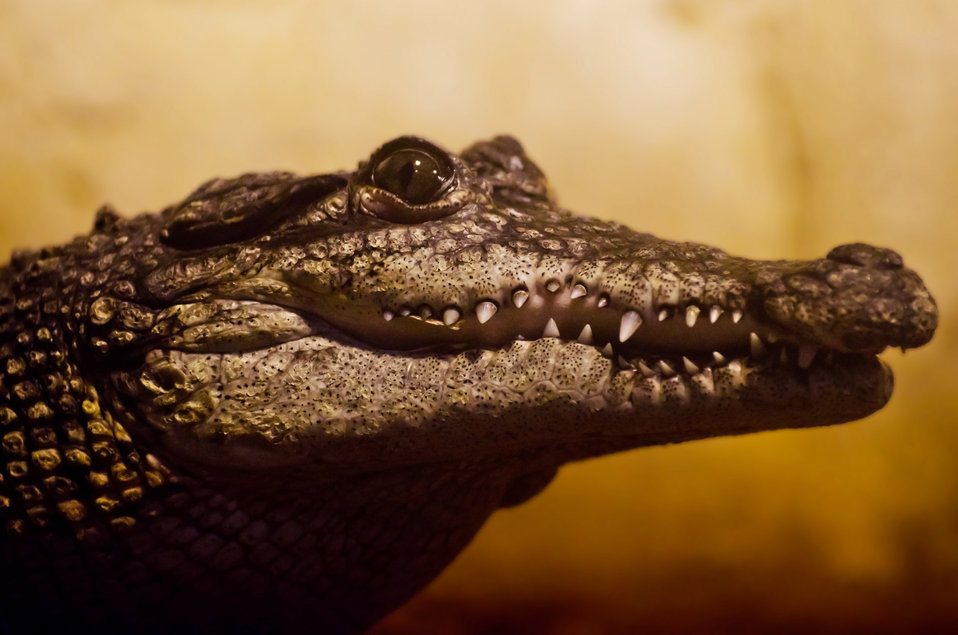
Crocodile - animals.